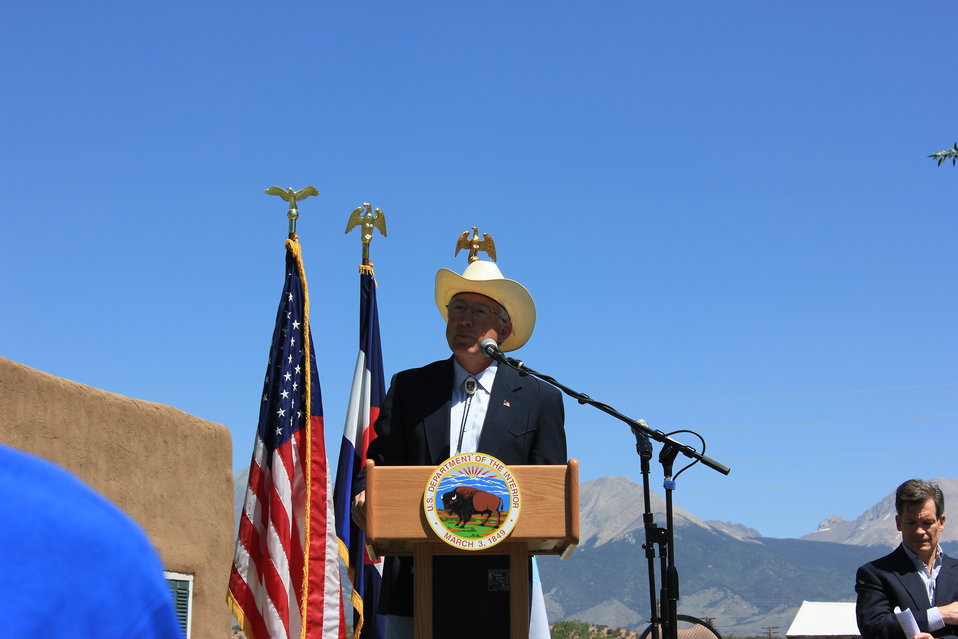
Historic Conservation Easement in Sangre de Cristo Mountains